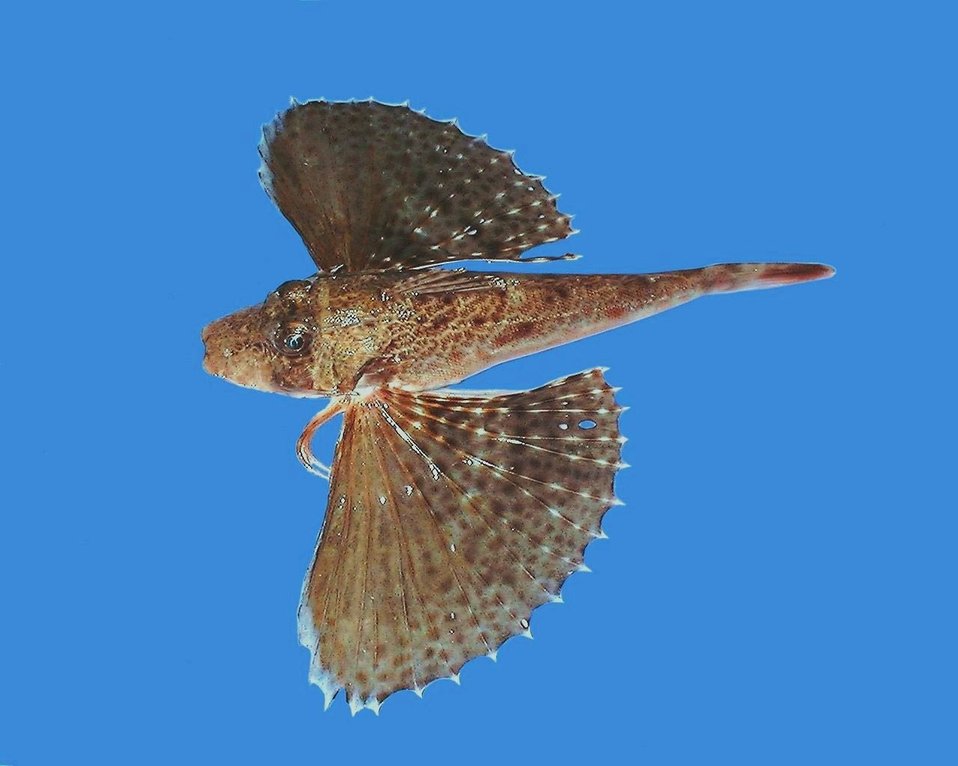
Blackwing searobin ( Prionotus rubio )